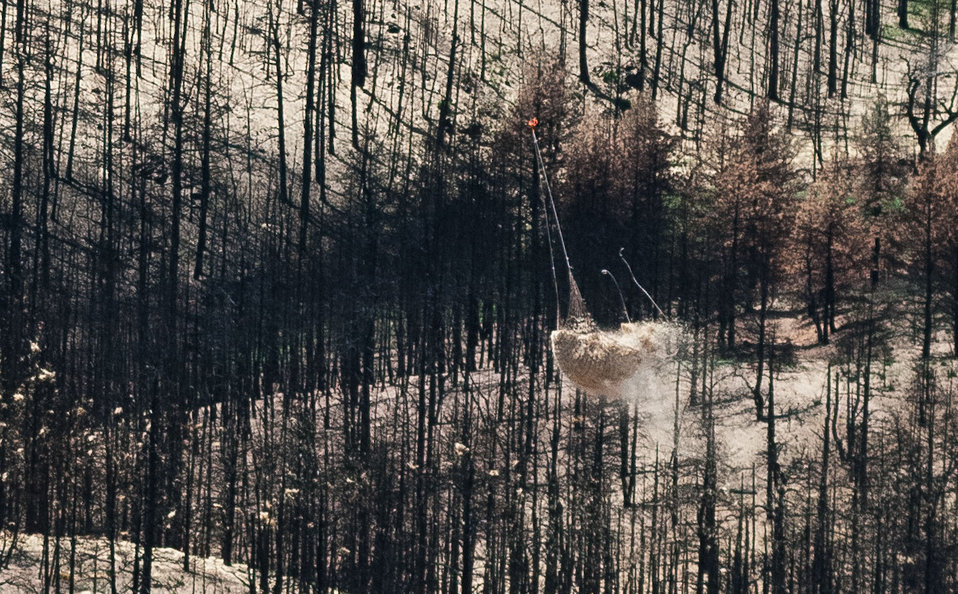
Mountain West Helicopter pilot Thierry Richards, releases one ton of straw from his Bell UH-1H helicopter on to a burned out area of the Poudre Canyon mountainside near Fort Collins, Colo., on Friday, July 20, 2012. This is an aerial application of straw will mitigate soil and ash runoff from the mountainous terrain leading to Seaman Reservoir, drinking water resource for the City of Greeley. Forest Service lands receive straw, while private and other lands receive a seed mix and straw to promote ground cover plant growth on ash-covered lands. In total, 1,800 tons of straw will be applied during the 14-day operation. One quarter of the cost was paid by the City of Greeley and the U.S. Department of Agriculture funded the remainder. The Hewlett Gulch Fire was started by a camper’s alcohol stove, on May 14, at the saddle of a picturesque mountain ridge along the Hewlett Gulch Trail of Poudre Canyon, in the Roosevelt National Forest, 60 miles north of Denver. At it’s peak more than 400 firefighters were battling fires being pushed by 50 mph winds that helped blacken over 12-square-miles of dry ground cover, brush and trees. Many of the trees were already dead and tinder dry from beetle-kill. Their efforts have successfully kept water in the reservoir clean and clear, while downstream water flow has gone from famous Colorado clear water to nearly black flows of water heavily laden with ash, silt, and burnt debris that recent thunderstorms have already washed down from the mountainsides.